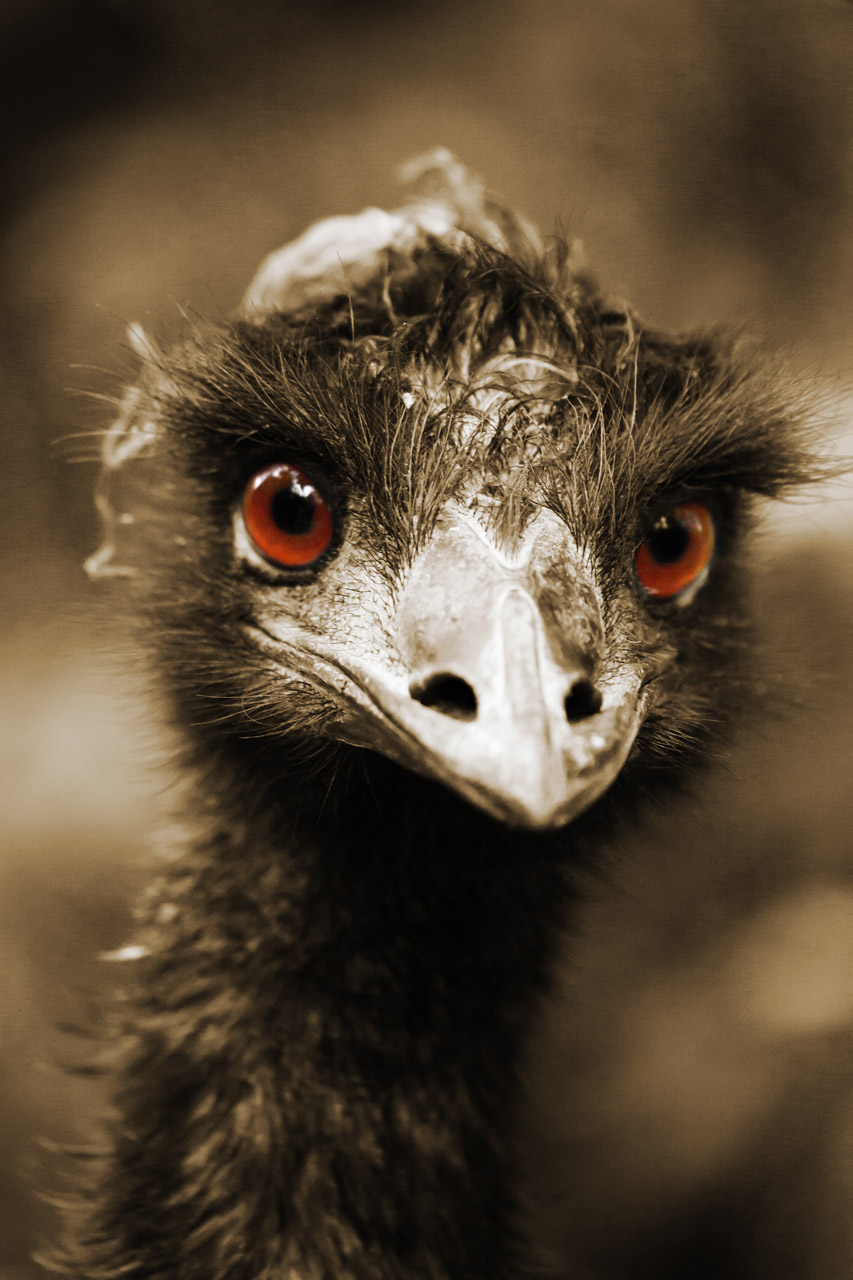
Ostriches look

Ostrich is looking funny at me.